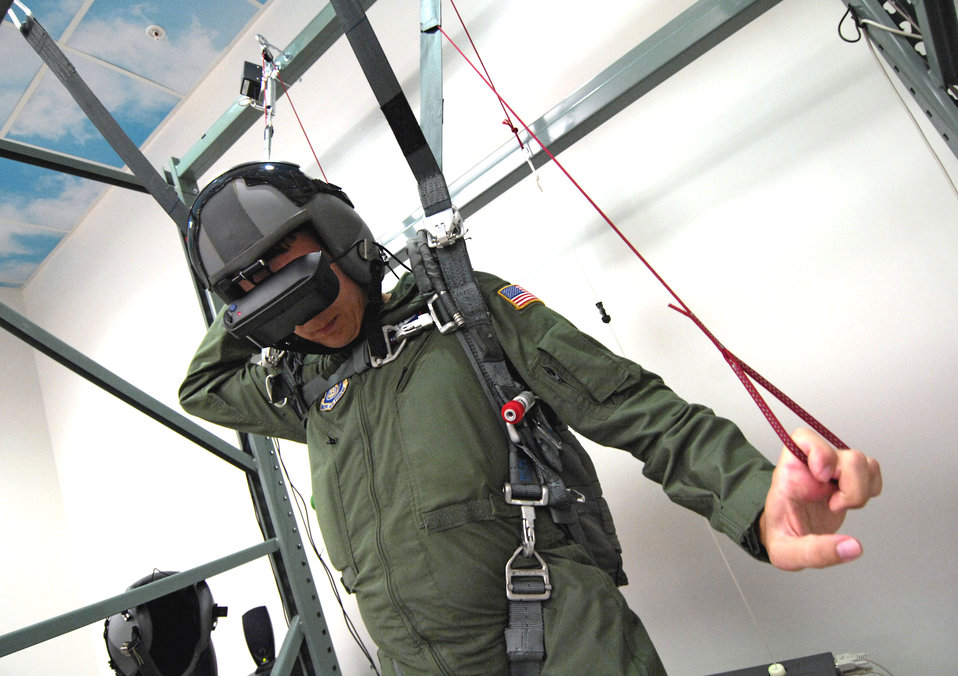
Virtual technology enhances training for aircrews

Tech. Sgt. Ken Bragg steers his parachute during virtual training at Hickam Air Force Base, Hawaii, on Oct. 4. Sergeant Bragg is the 15th Operations Support Squadron wing tactics NCO in charge.